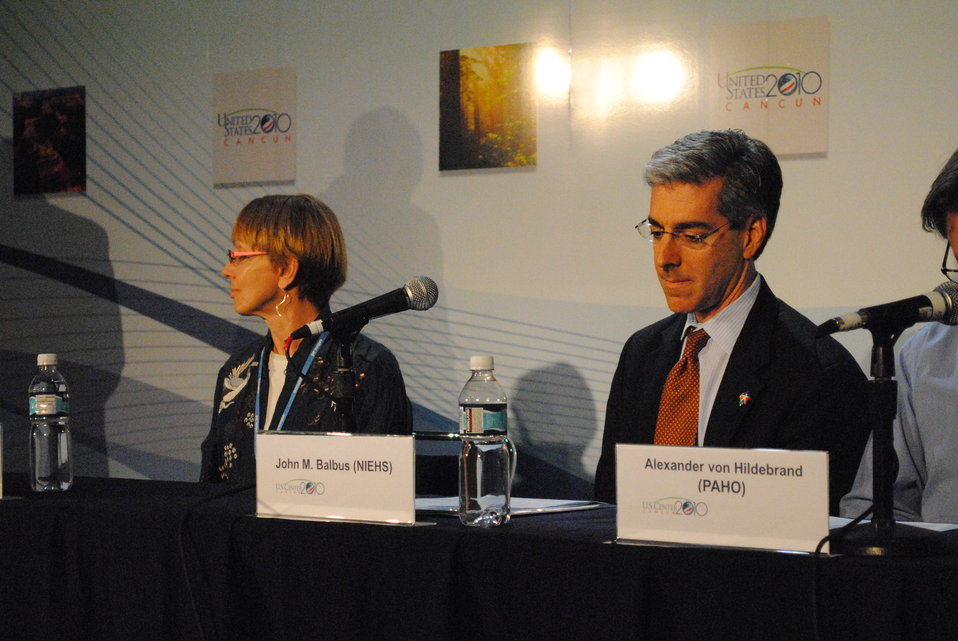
NIEHS' Dr. Balbus Responds to Questions

The National Institute of Environmental Health Sciences Dr. John Balbus responds to questions during the side event, 'Climate Change and Human Health,' at the U.S. Center at COP-16 on December 3, 2010.